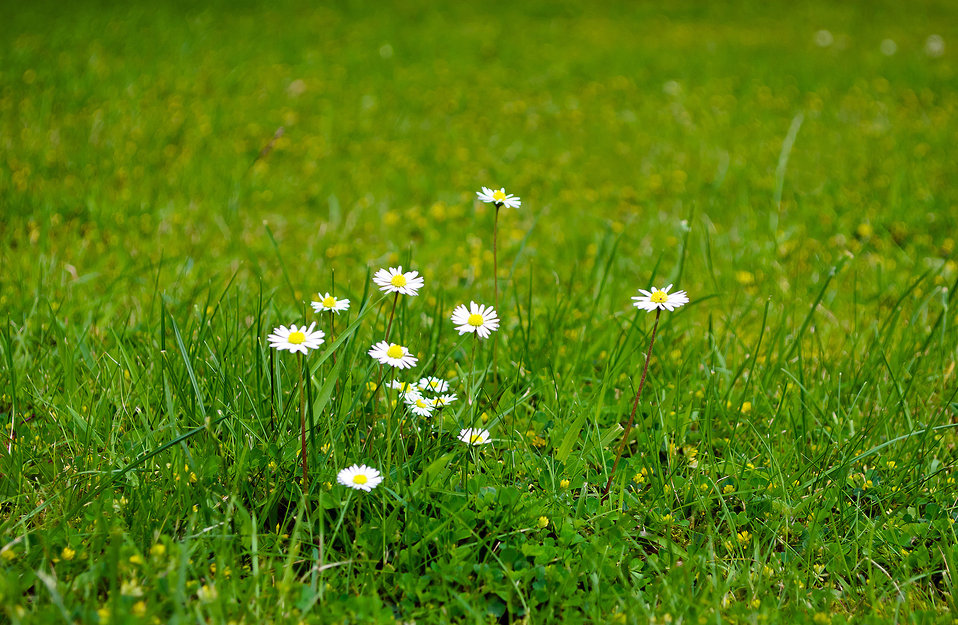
Flowers on the grass.